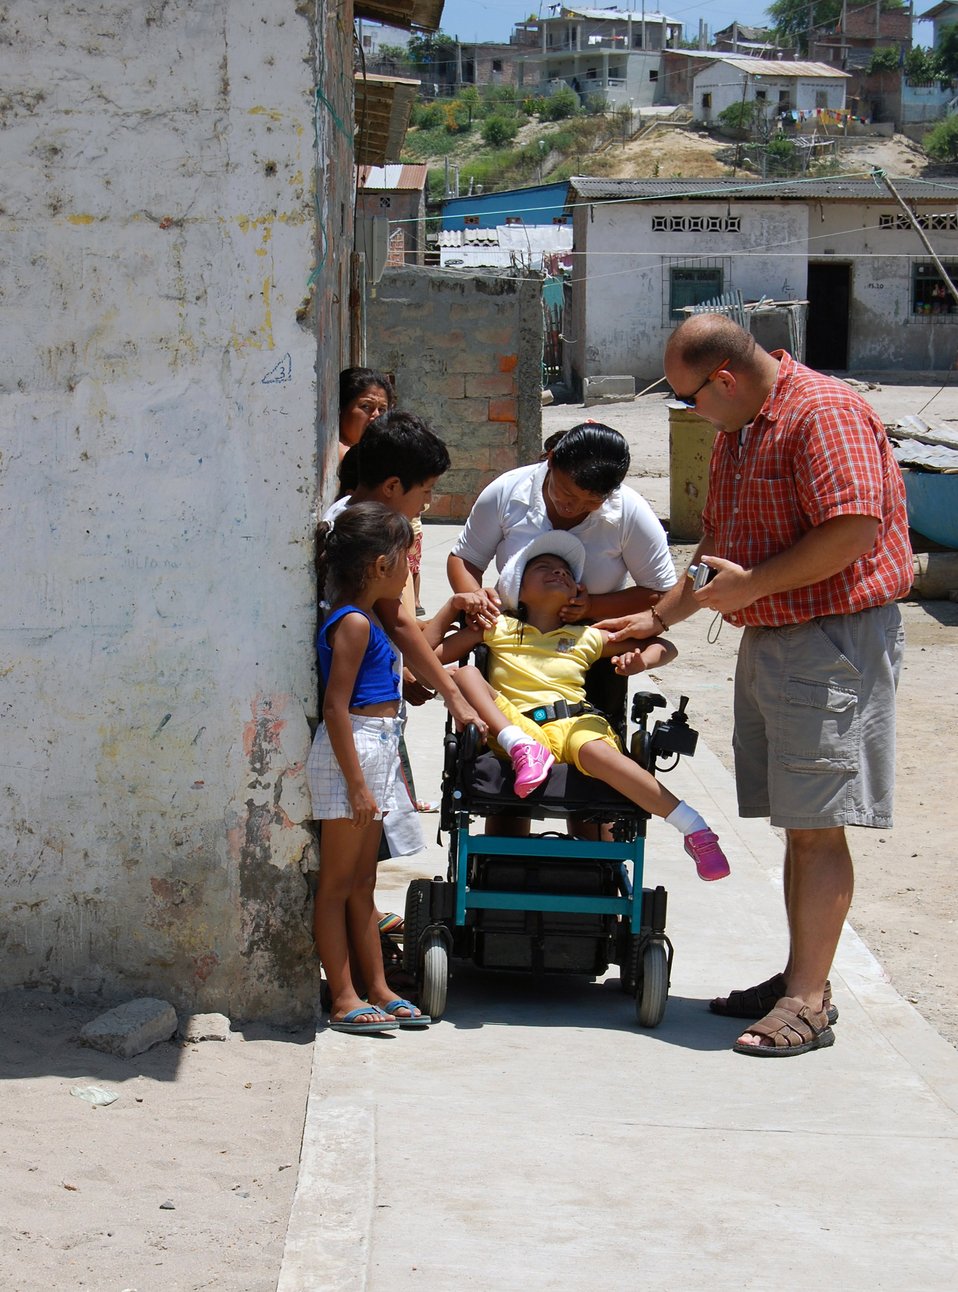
Life-changing wheelchair and ramp donation for Ecuadorian girl

Staff Sgt. Elton Gill talks with 11-year-old Kelly Yuleisy Arcentales and her family during a visit to do the final inspection of a wheelchair ramp that was designed and installed just for her. The completion of the wheelchair ramp from Kelly's home to the Jaramijo city sidewalk finalized a three month project by Airmen to provide her with access to her local community. Sergeant Gill is a chaplain's assistant at FOL Manta.